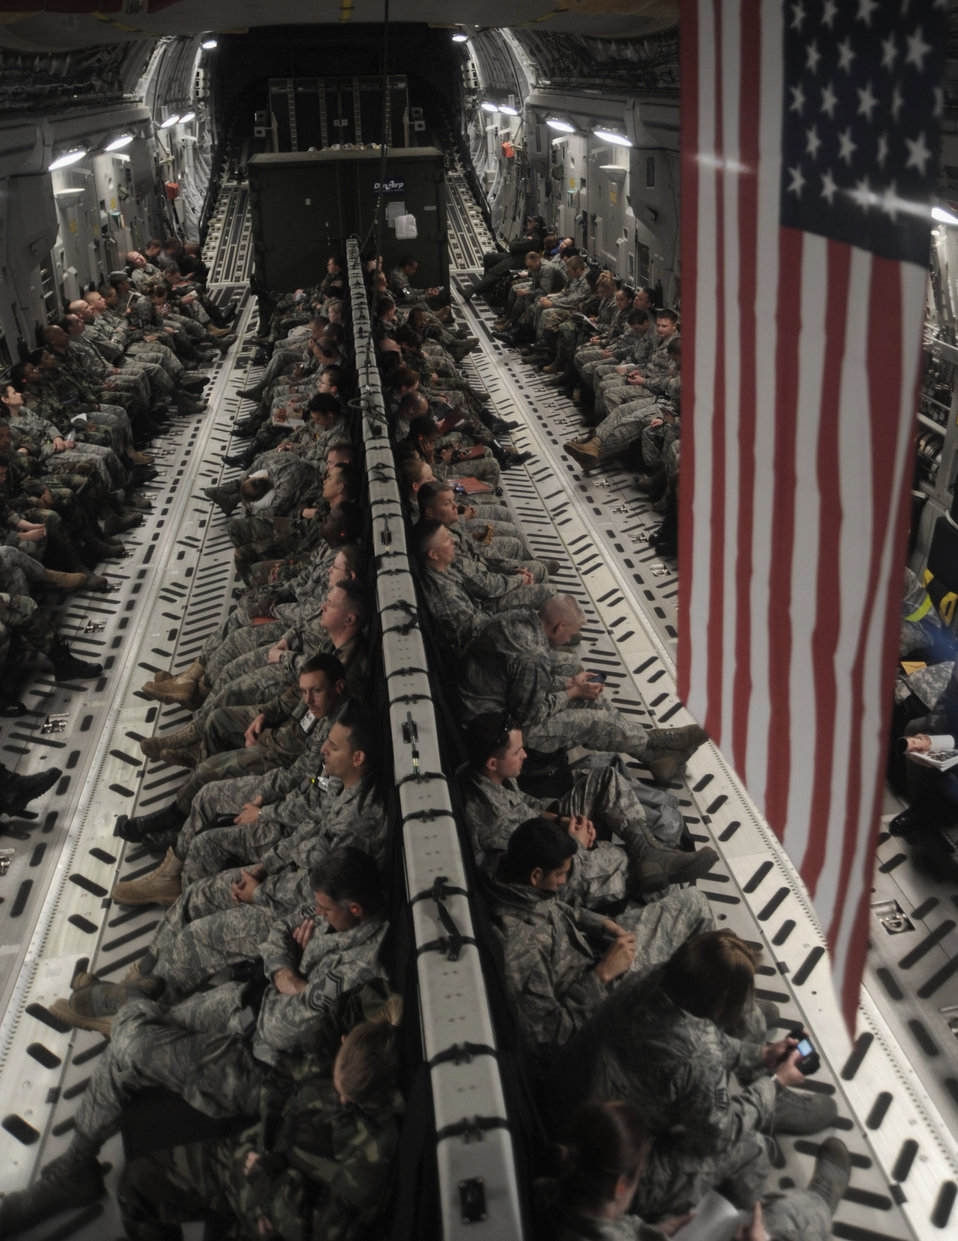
Mission complete

In a C-17 Globemaster III, Airmen from the 375th Airlift Wing return home May 17 to Scott Air Force Base from Volk Field, Wis. Active-duty, Air National Guard and Reserve Airmen were at Volk Field to participate in a week-long training exercise in preparation for an operational readiness inspection next year.